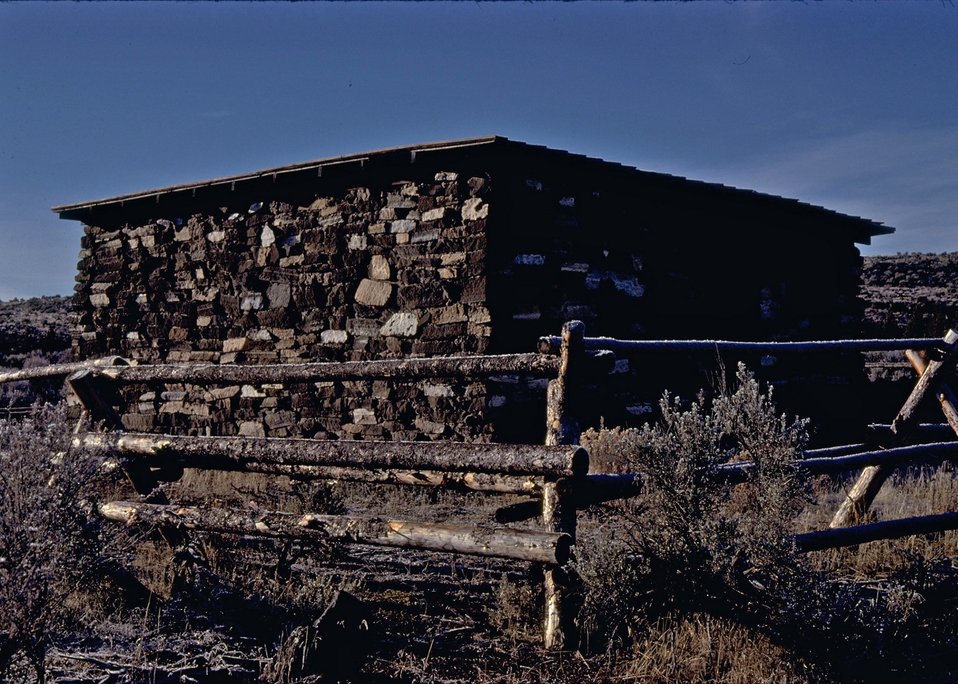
Remaining structureat the Gap Ranch "CCC" camp near Riley, Oregon.